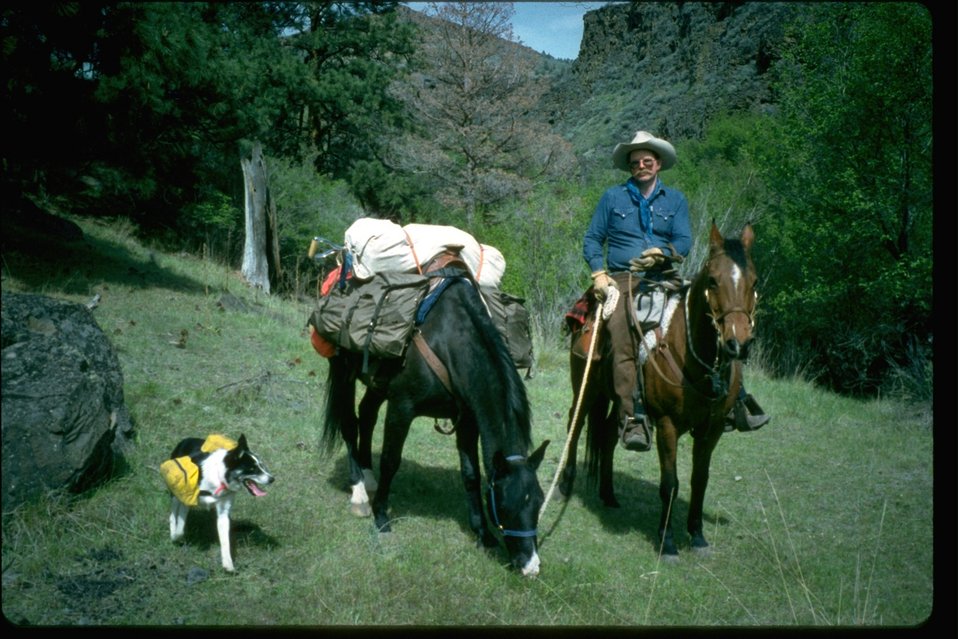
Man riding horses with his dog along the Deschutes River.